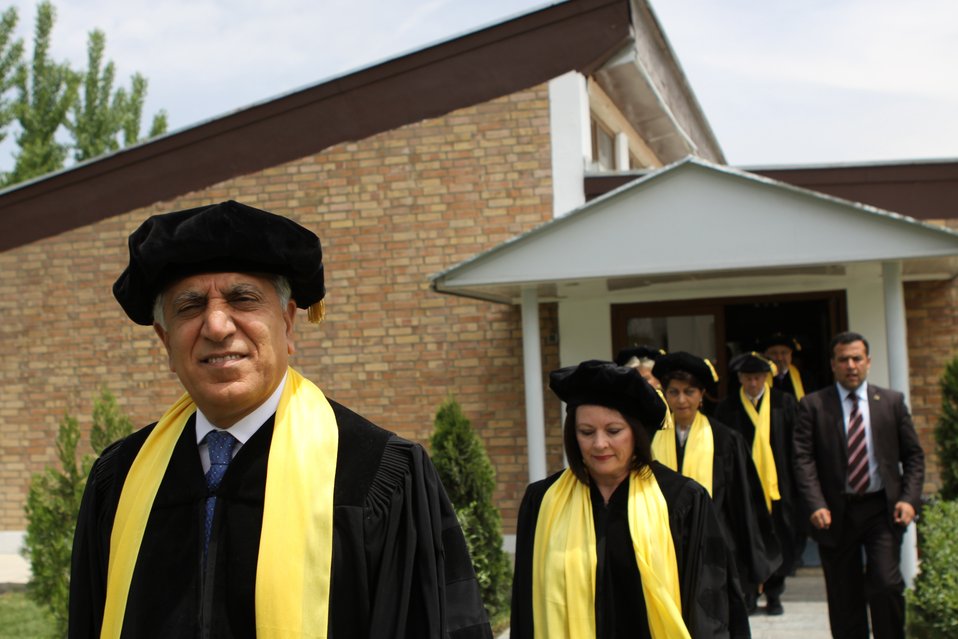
100526 AUAF Graduation 090